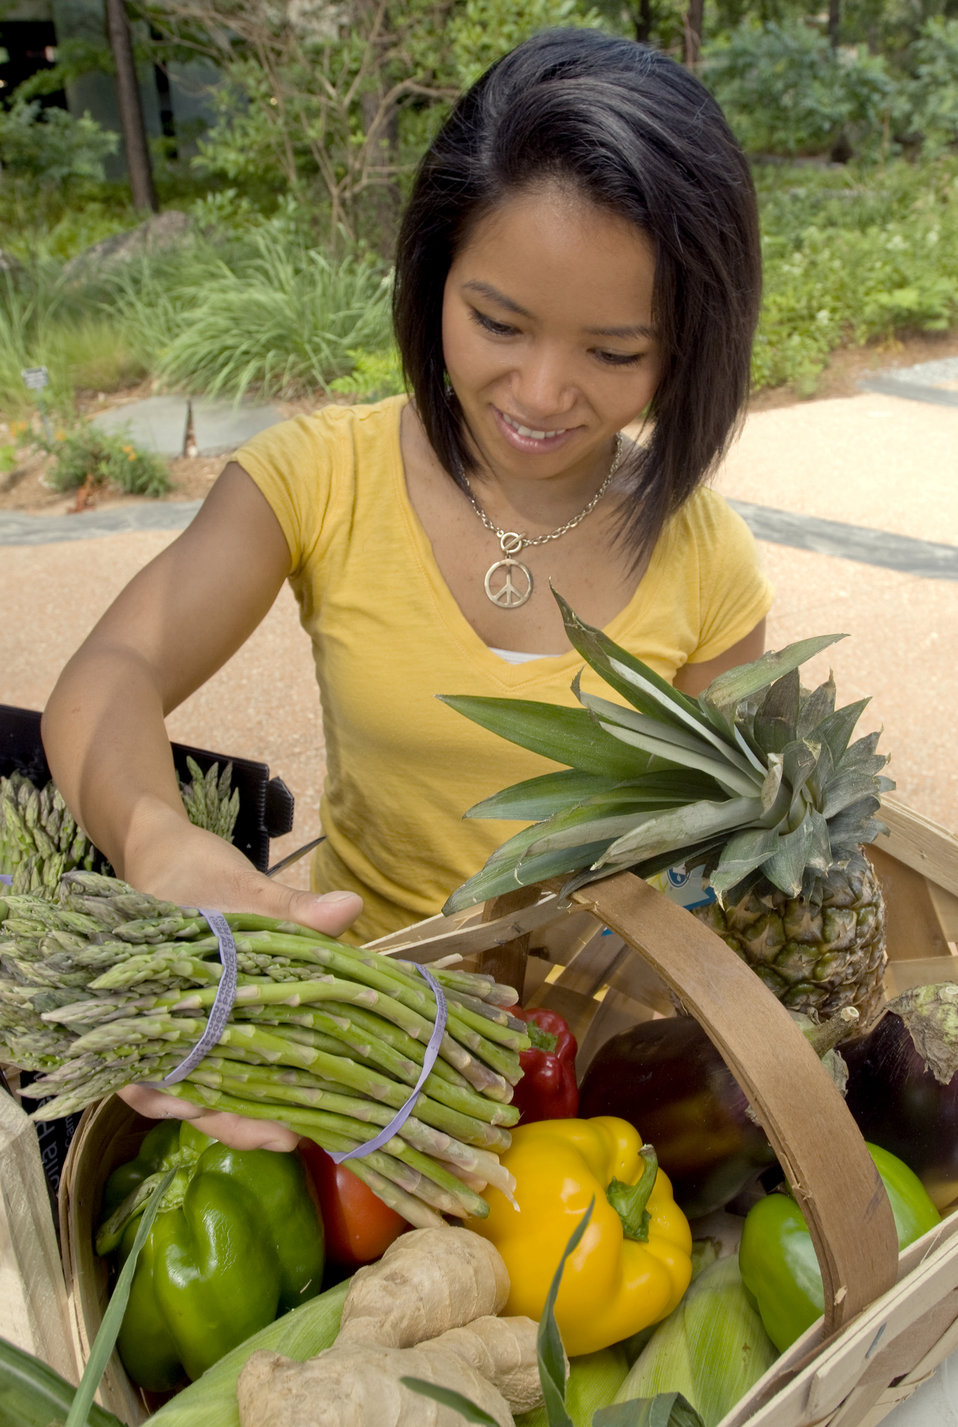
Woman shopping for produce

After having made her choice in a bunch of asparagus stalks, this woman was photographed adding the produce to a woven wooden basket that she'd filled with other fruits and vegetables upon which she'd decided during her shopping activities at a mobile produce market.